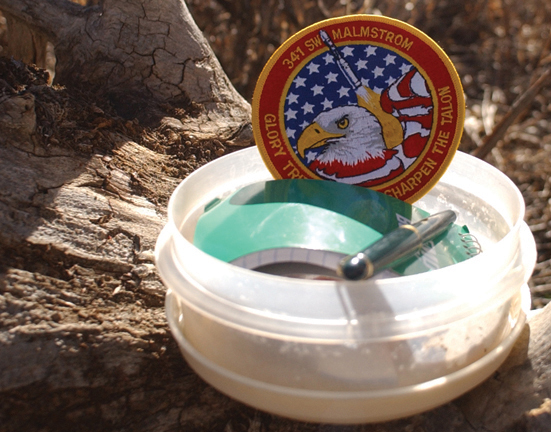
GPS satellites help outdoor hobbyists link up

MONTANA -- Thanks to the Global Positioning System and inexpensive GPS receivers, the sport of geocaching is growing. Most caches contain a log book, pencil and small trinkets for trade.